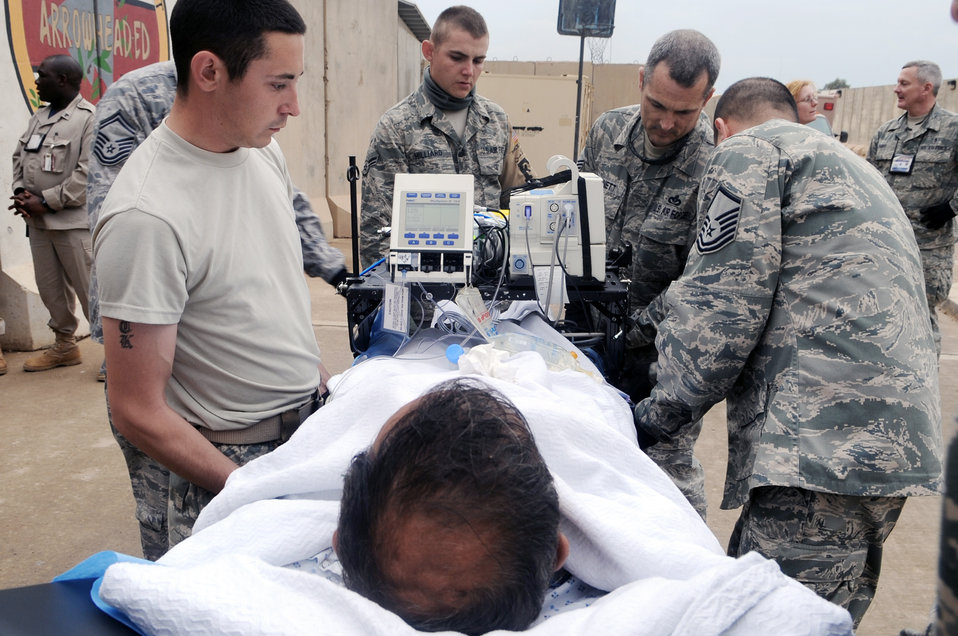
Balad become divert base for wounded troops

332nd Expeditionary Medical Group members secure a patient stretcher during an aeromedical evacuation mission April 17, 2010, at Joint Base Balad, Iraq. The 332nd EMDG is expecting about five aeromedical evacuation missions a week from Afghanistan, plus select in-system flights that will be flown as needed.